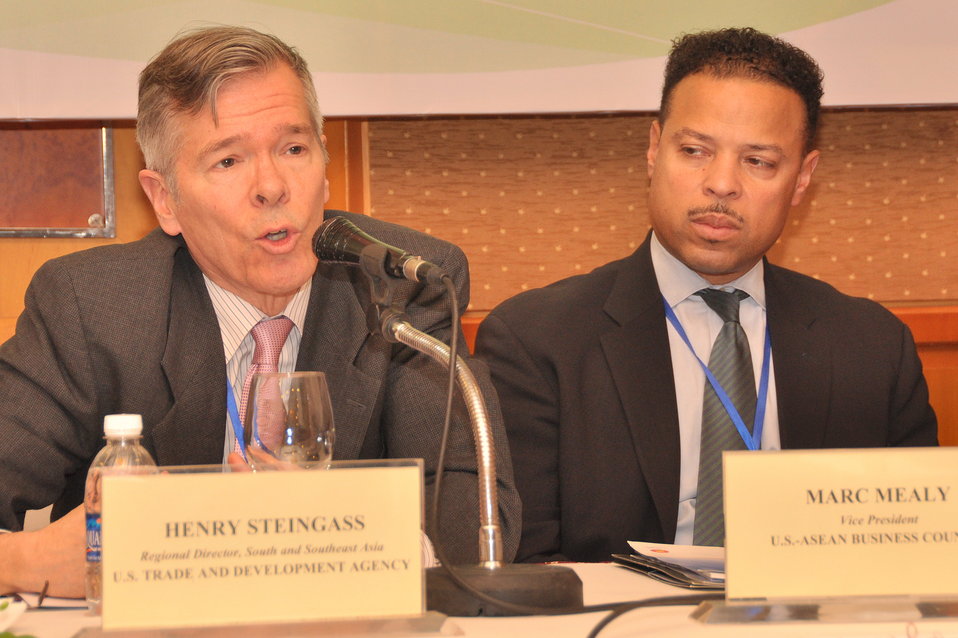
Mr. Henry Steingass, Regional Director, South and Southeast Asia at the U.S. Trade and Development Agency, addresses media at the LMI Infrastructure Best Practices Exchange in Hanoi

January 14, 2013